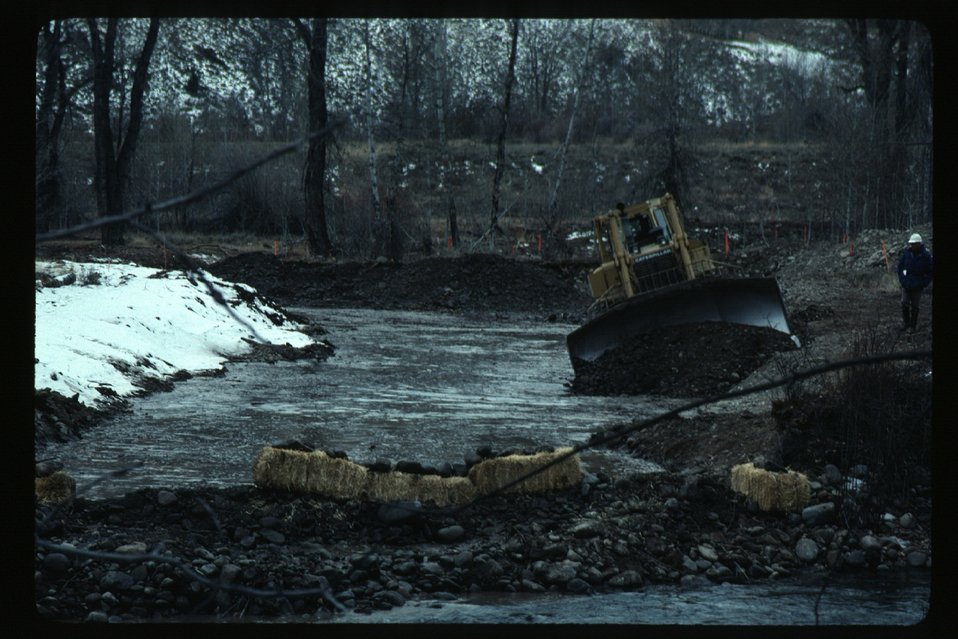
Wood River Rechanneling Recreation and Riparian Shoshone Field Office USRD Upper Snake River District